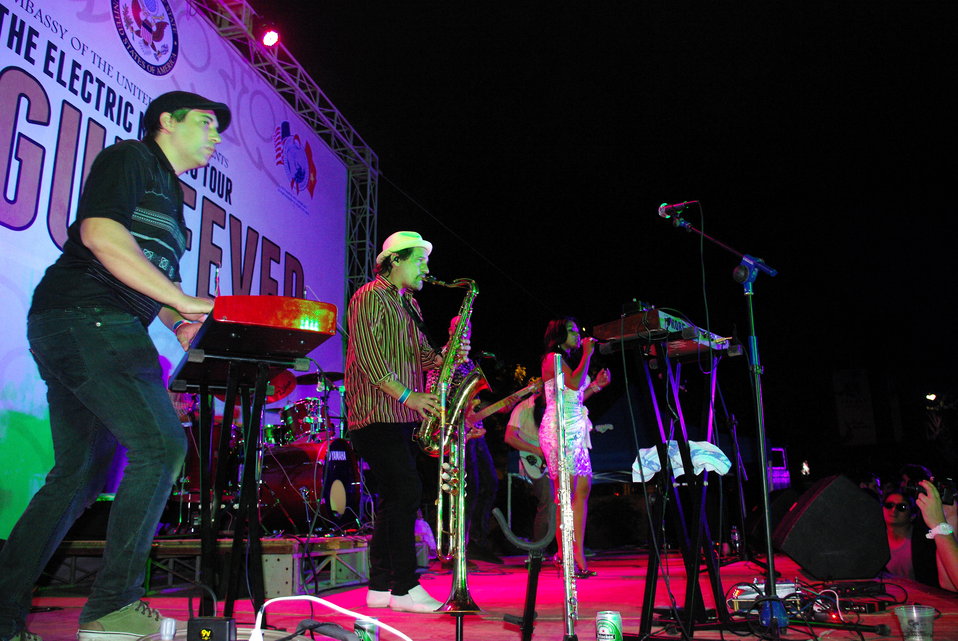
PEPFAR, U.S. Embassy Host Dengue Fever Concert in Hanoi